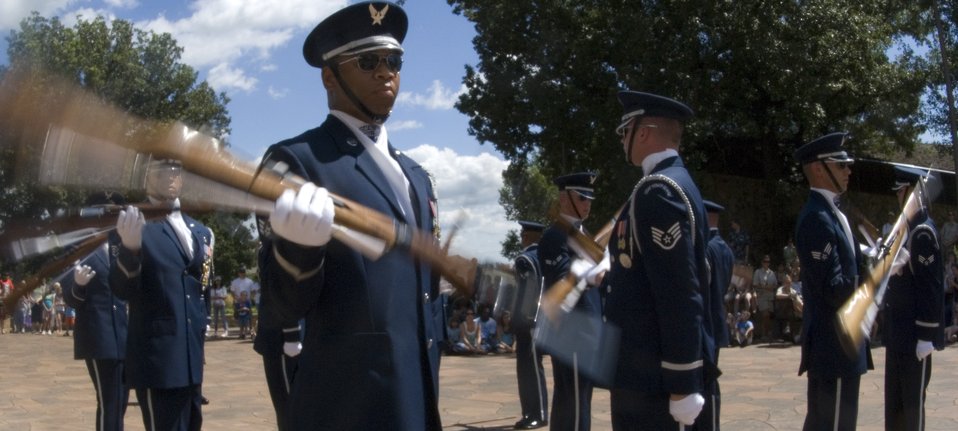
Air Force Week in the Heartland reaches out to Omaha zoo

Air Force Honor Guard drill team members perform Aug. 12 for visitors of the Henry Doorly Zoo in Omaha, Neb. Zoo visitors also had the chance to see the Do Something Amazing display featuring an F-16 Fighting Falcon, a motion simulator and video simulators during Air Force Week in the Heartland.